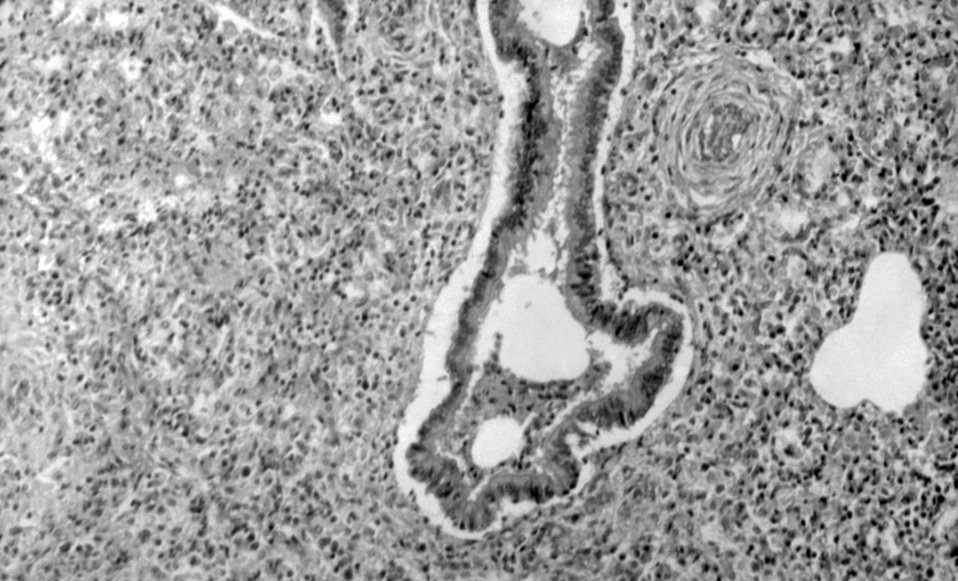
A photomicrograph of lung tissue revealing Pneumonia Alba, which is caused by congenital syphilis.